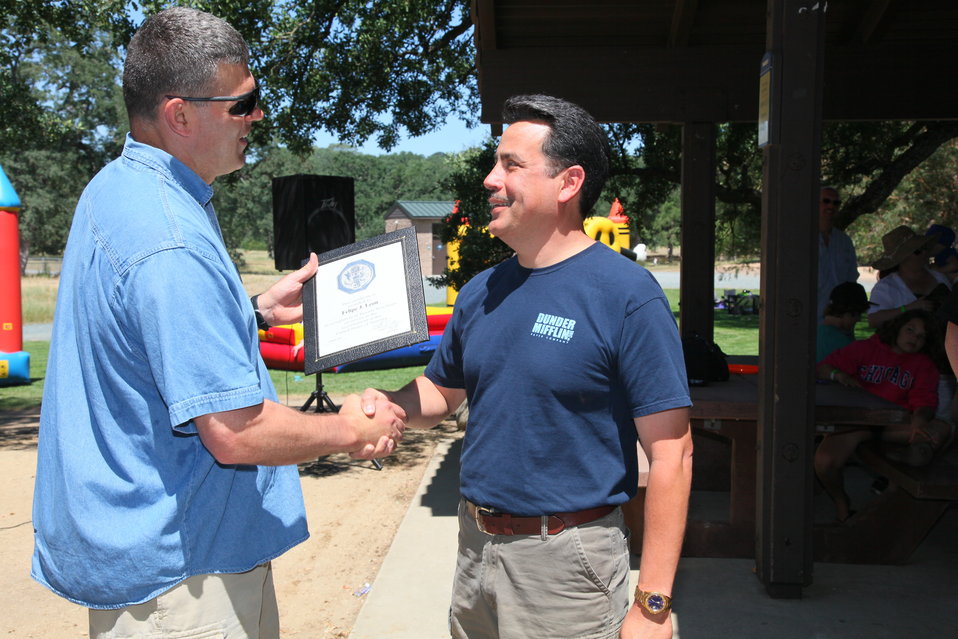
2011 Annual Picnic